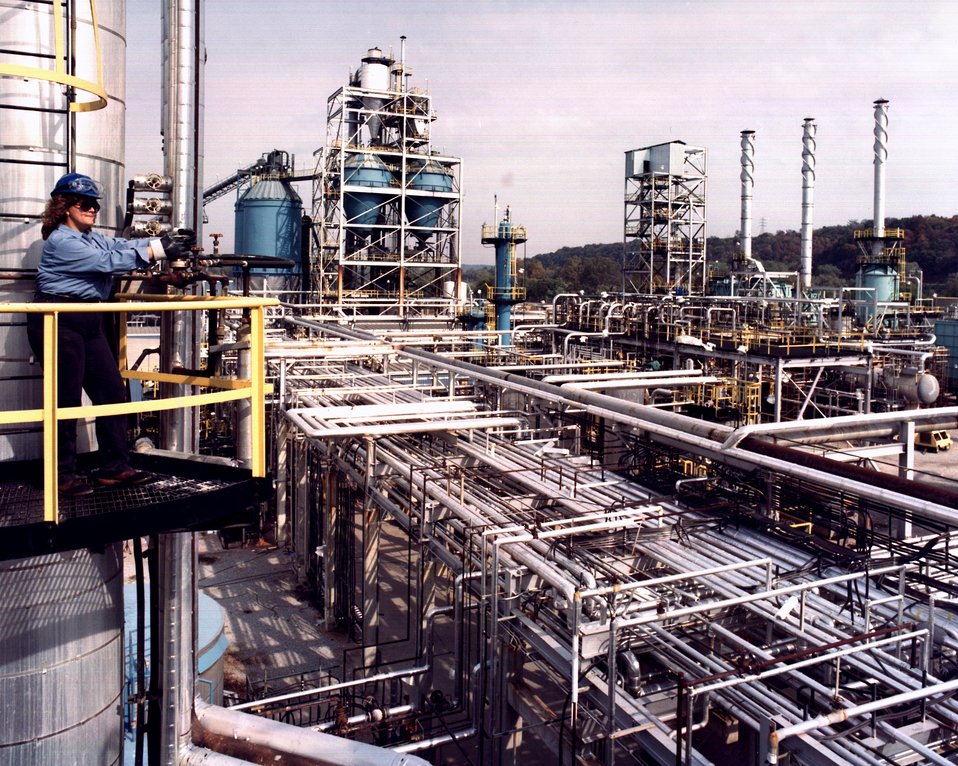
OVERVIEW OF PART OF THE H-COAL PILOT PLANT.